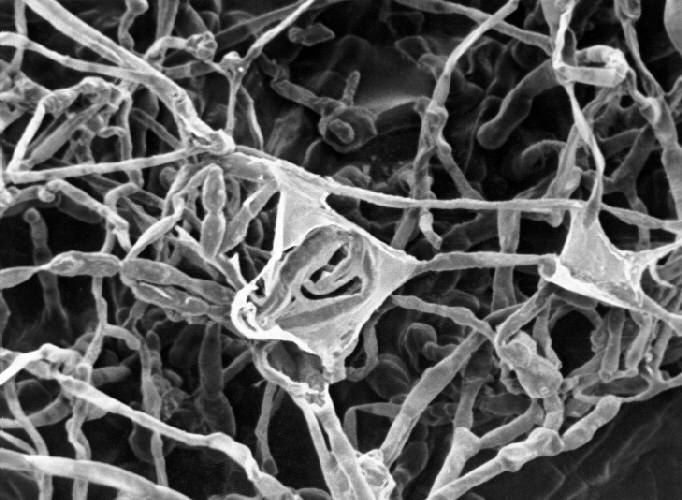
This scanning electron micrograph (SEM) reveals some of the ultrastructural morphology this pigmented, or dematiaceous mould, Xylohypha nigrescens. This mould is known to be the cause for the disease, phaeohyphomycosis, chromoblastomycosis, and mycetoma.